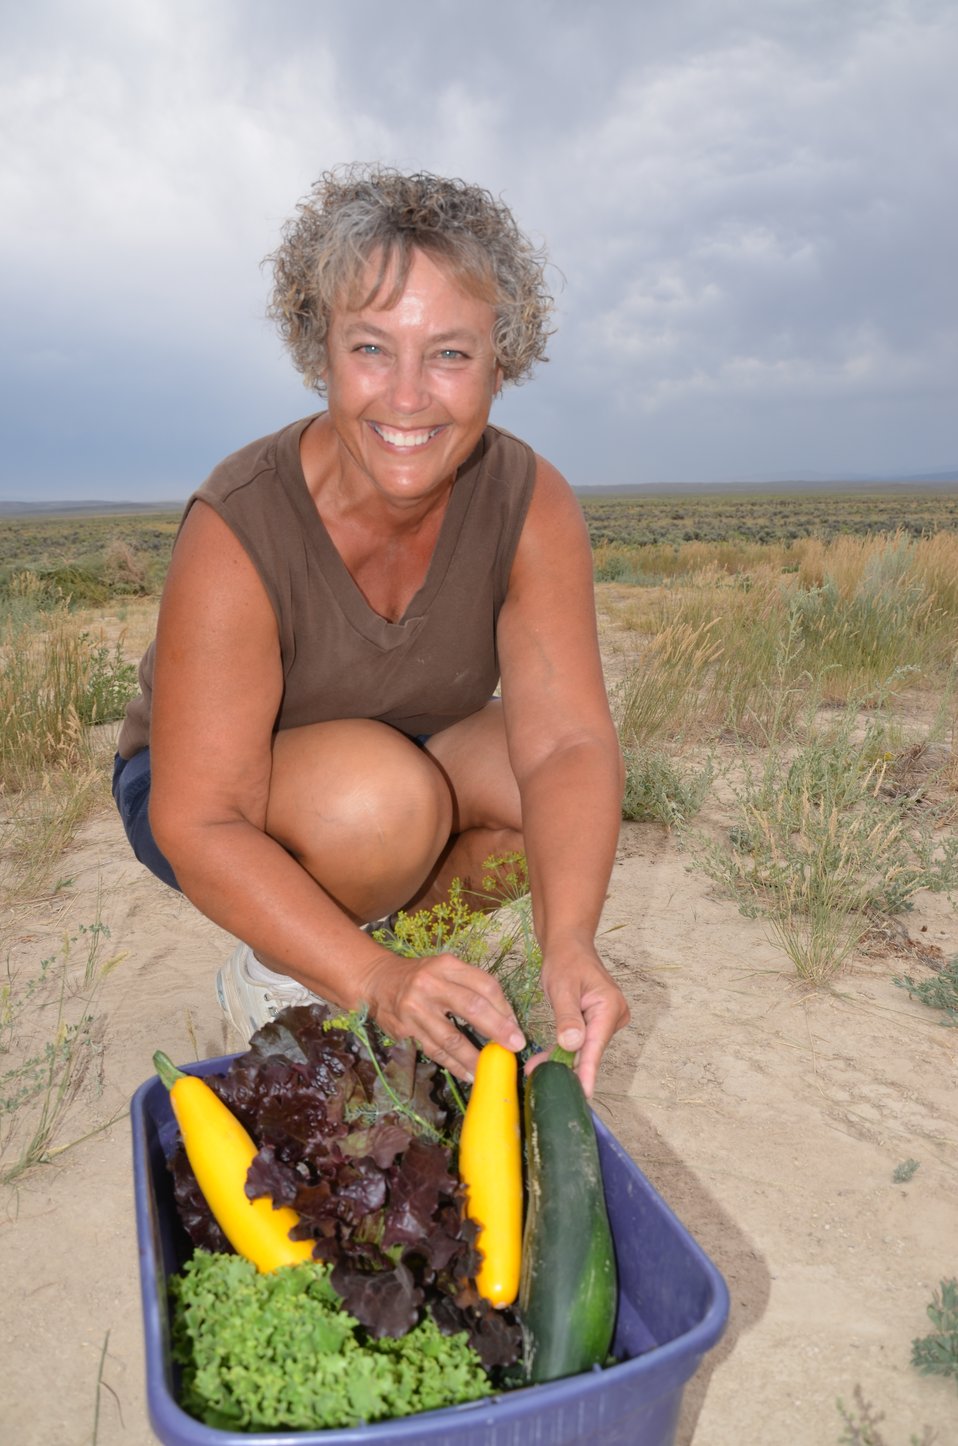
Carol Huether, of Spring Creek, Nev., displays herbs and vegetables grows on her farm. With technical and financial assistance through the U.S. Department of Agriculture USDA StrikeForce for Rural Growth and Opportunity initiative, she was able to install a seasonal high tunnel to help protect her produce from the elements and extend her growing seasons.